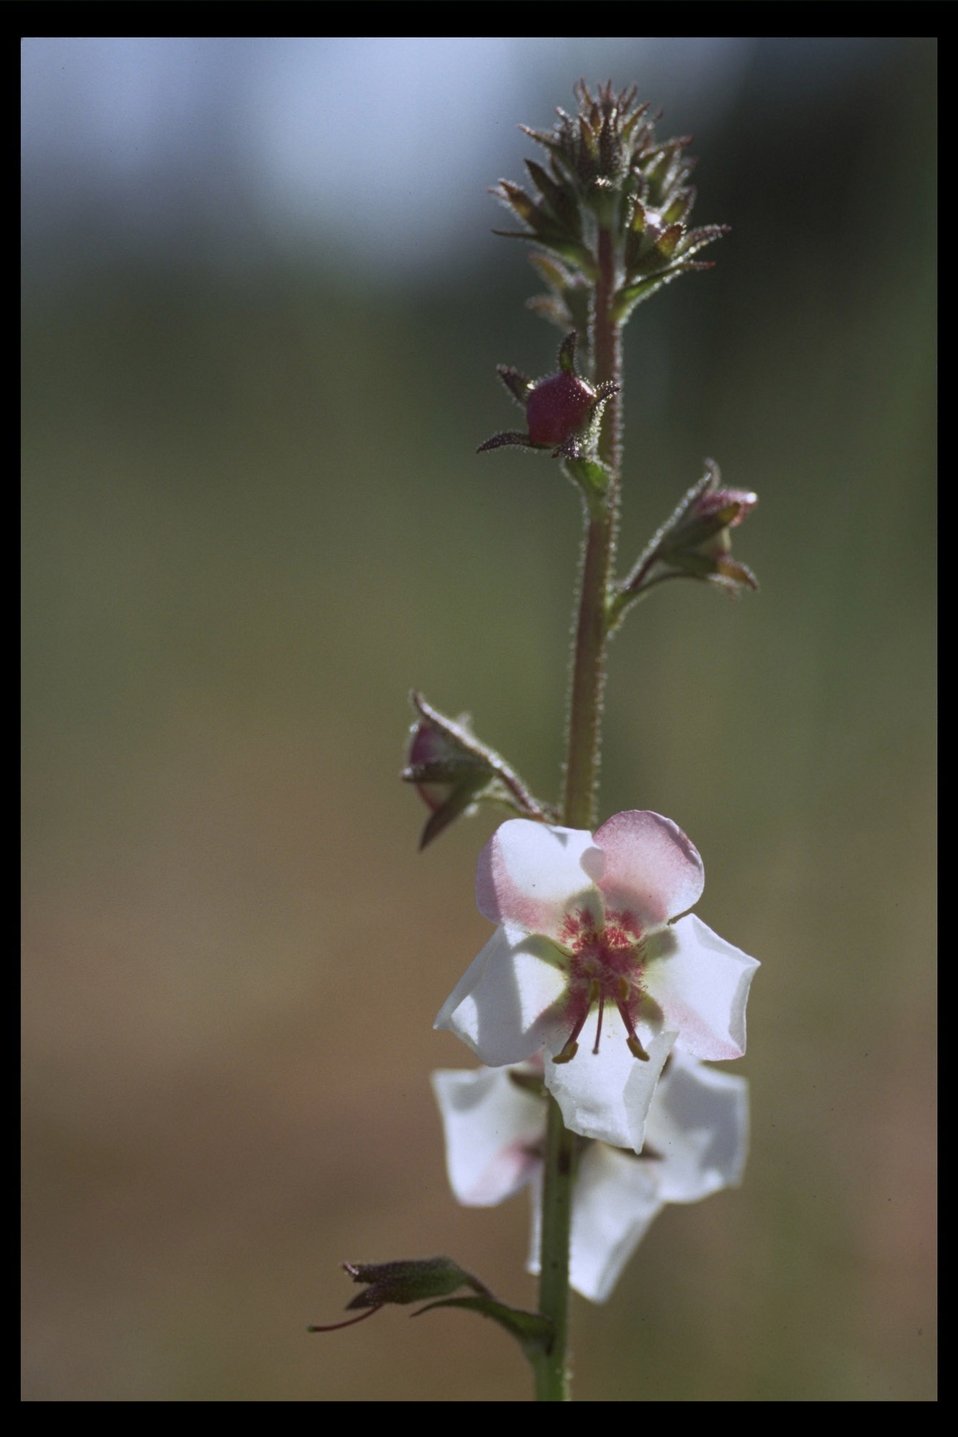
The white variety of Moth Mullein (Verbascum blattaria) along Crowfoot Road.